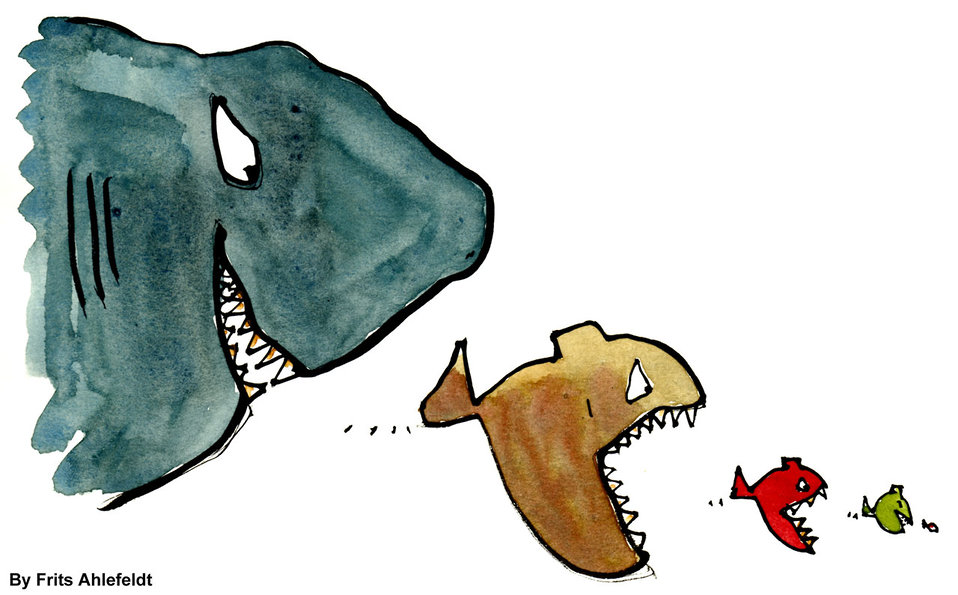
Fish eating fish eating...

Classic illustration about the food chain.